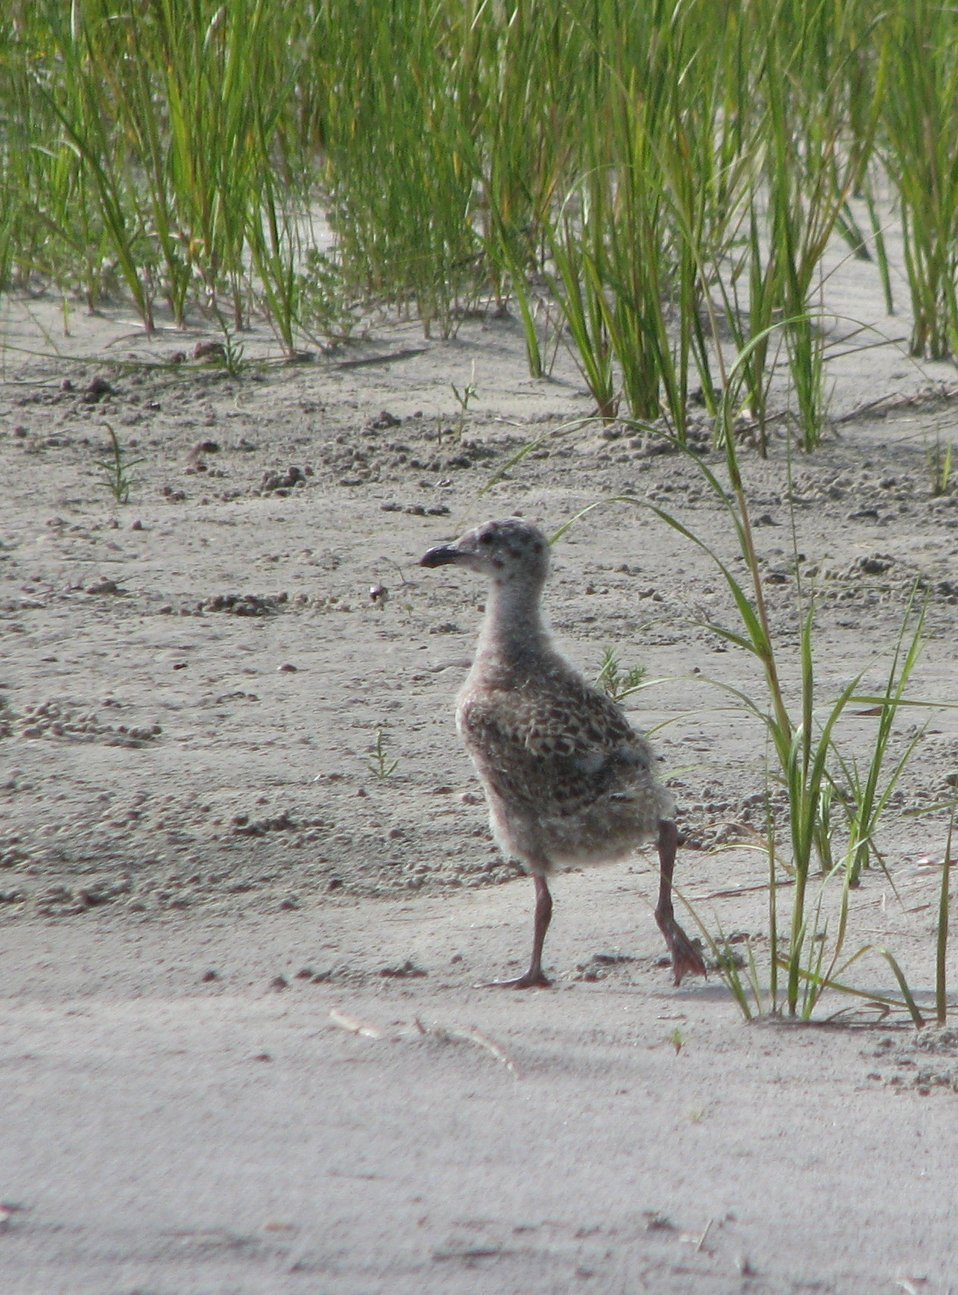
Black-backed Gull chick

Black-backed Gull (Larus marinus) chick at Little Beach, NJ, Edwin B. Forsythe NWR